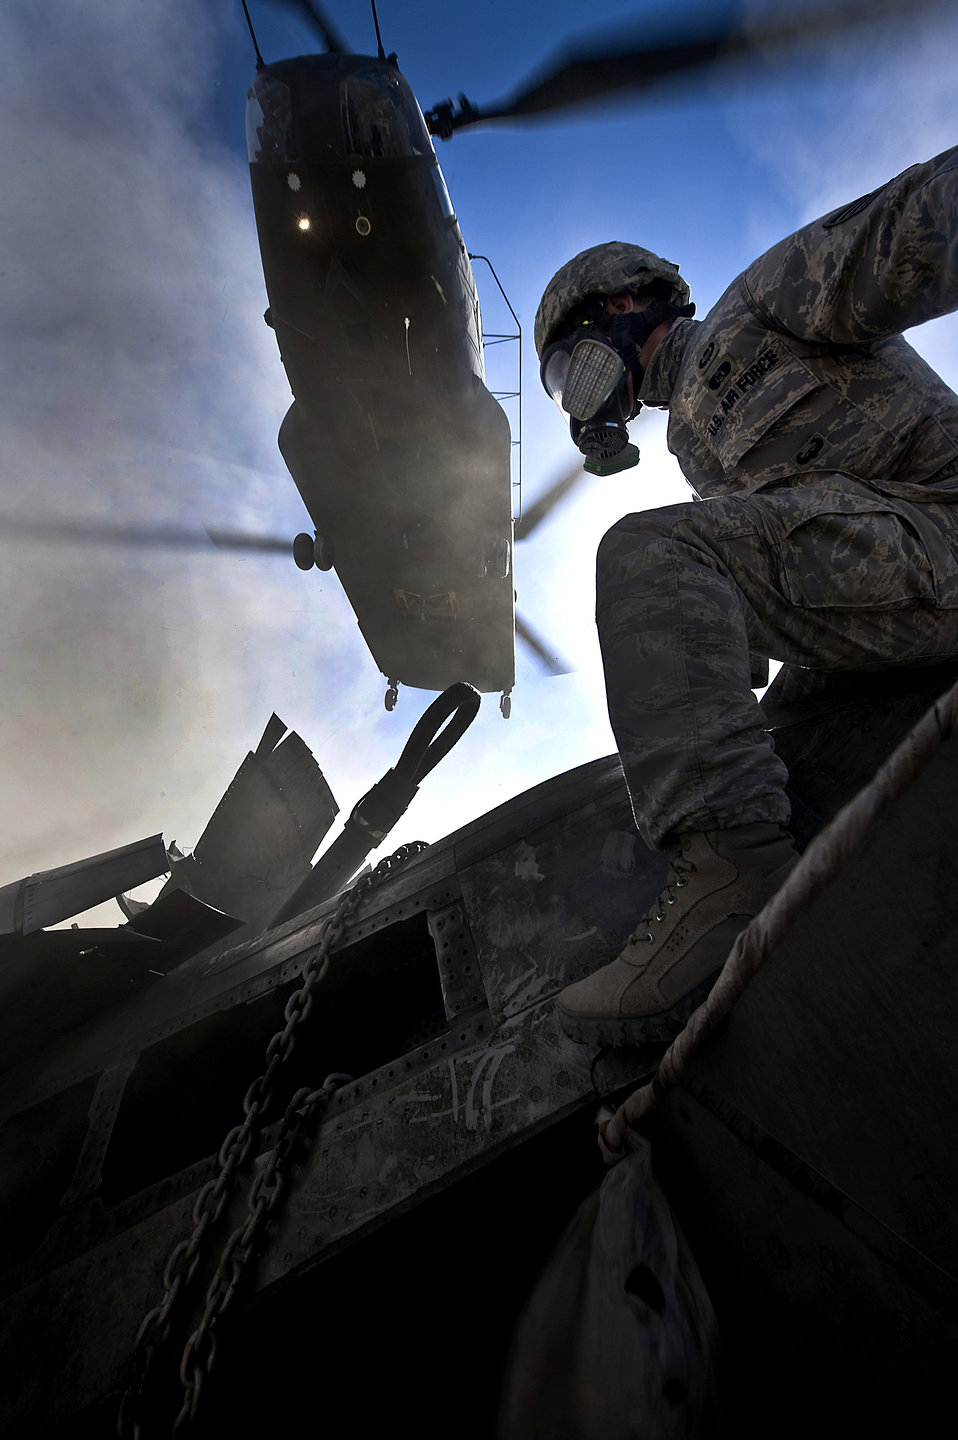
Take it away, boys!

Staff Sgt. Ian Zerby recovers an aircraft part during a recovery and clean-up operation Nov. 9, 2011, in the Nevada Test and Training Range. An F-15 crashed Oct. 24, 2011, northwest of Alamo, Nev. Zerby is assigned to the 820th RED HORSE Squadron airborne flight at Nellis Air Force Base, Nev.